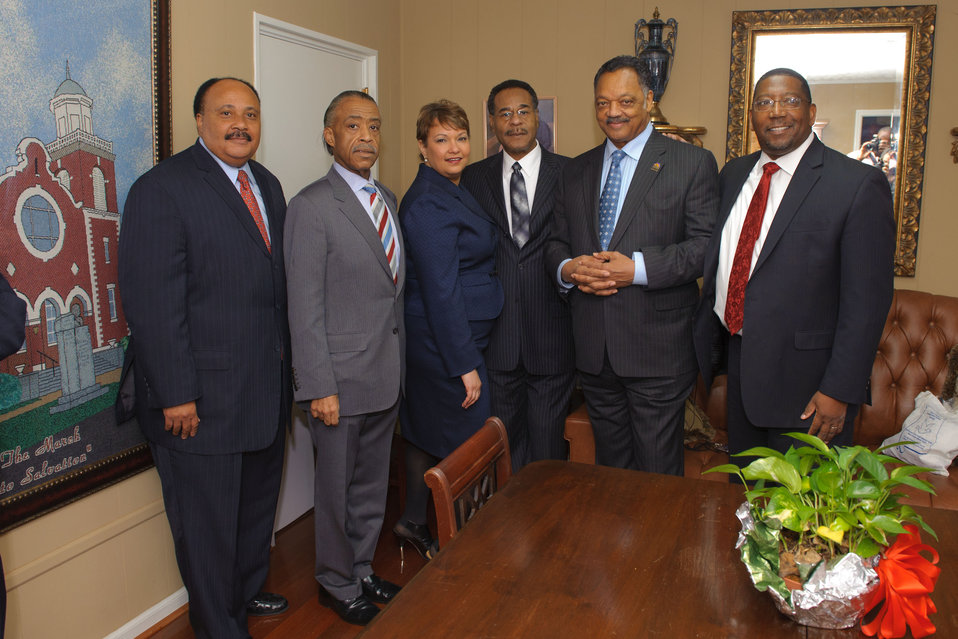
Administrator Jackson and civil rights leaders gather before her historic speech

From left to right, Martin Luther King III, Rev. Al Sharpton, Congressman Emanuel Cleaver II, Rev. Jesse L. Jackson, Sr., Pastor Tony Scott from Brown Chapel AME